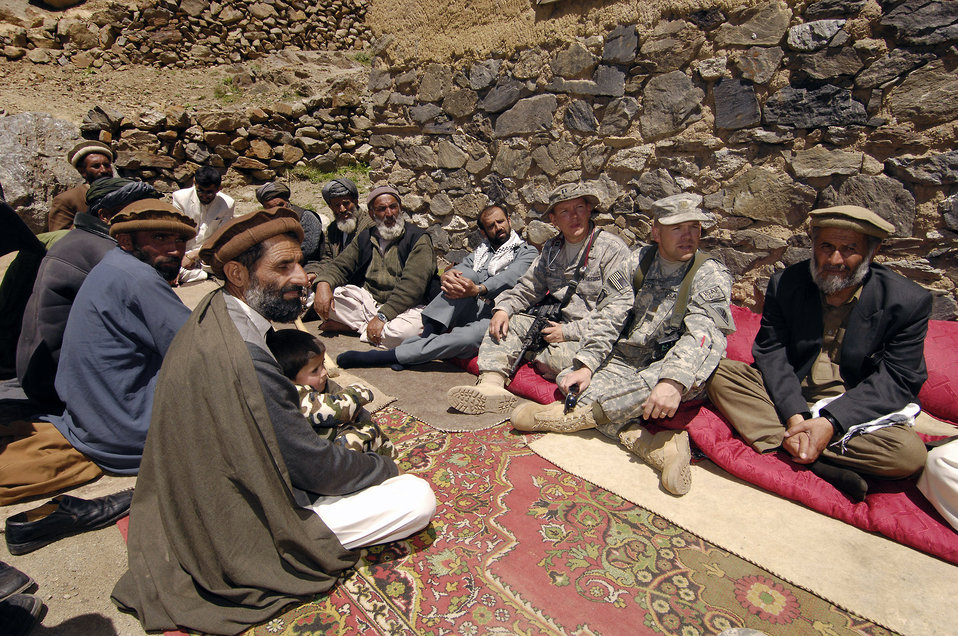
Let's talk...

In the Panjshir Province, Afghanistan, elders meet May 29 with Capt. Glenn Little (left) and Maj. Nicholas Dickson from two reconstruction teams about a local medical visit.